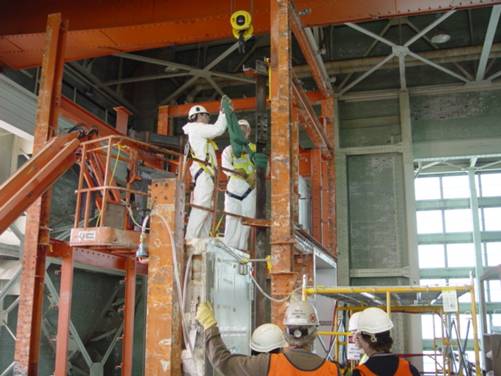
Recovery Act Workers Safely Decommission Brookhaven Nuclear Reactor

Recovery Act workers at BNL receive thorough safety training involving the hazards they encounter in the Brookhaven Graphite Research Reactor (BGRR) Project.
The Recovery Act provided $39 million to the Lab to decommission the world’s first reactor built solely for peaceful research purposes. Completion of the reactor decommissioning, scheduled for later this year (2010), ends EM legacy cleanup activities at the Lab.
Recovery Act workers are dismantling a 4,760-ton bioshield made of concrete and steel that surrounded a 700-ton graphite pile at the reactor’s core. Last year, the workers safely removed that pile and shipped the graphite blocks to the Nevada National Security Site for disposal.